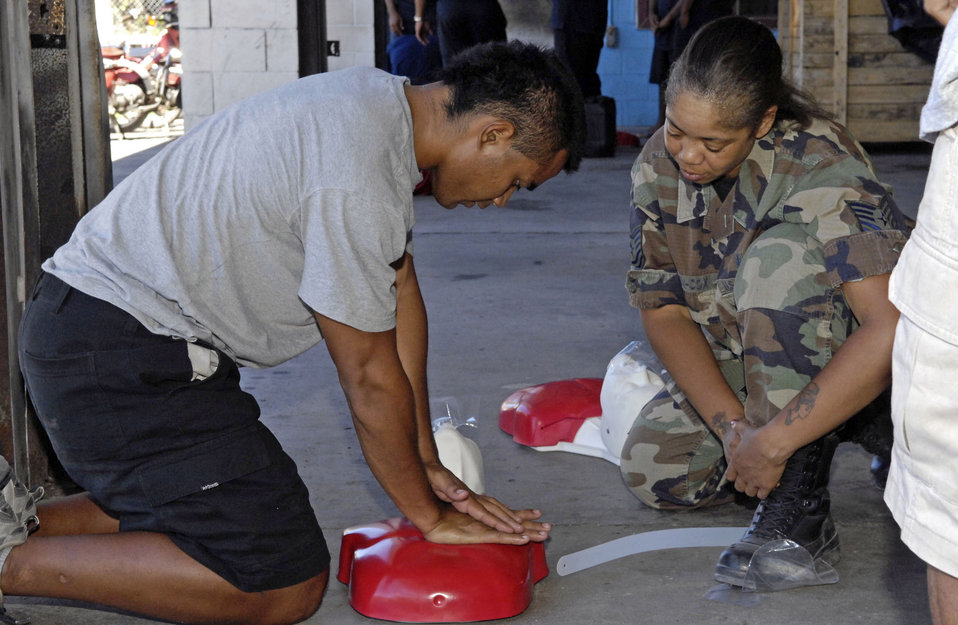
Reservist helps fellow firefighters in Nauru

Tech. Sgt. Michelle Bligen-Cox teaches CPR to a firefighter July 25 in the Republic of Nauru. Sergeant Bligen-Cox is part of a 12-person, joint-force U.S. Pacific Command team sent to provide assitance and training to caregivers and first responders on the small South Pacific island. She is assigned to the 35th Medical Group at Misawa Air Base, Japan.